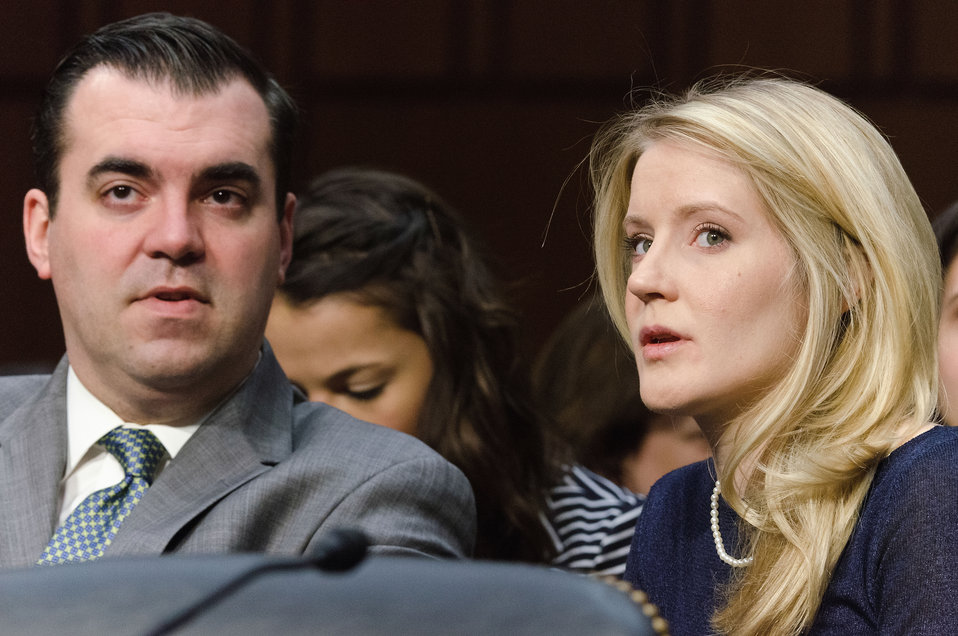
Agriculture Assistant Secretary for Congressional Relations Brian Baenig (left) and Agriculture Press Secretary Courtney Rowe (right confer prior to Agriculture Secretary Tom Vilsack’s testifying on “Healthy Food Initiatives, Local Production and Nutrition” before the Senate Agriculture Committee on Wednesday, March 7, 2012 in Washington, D.C.